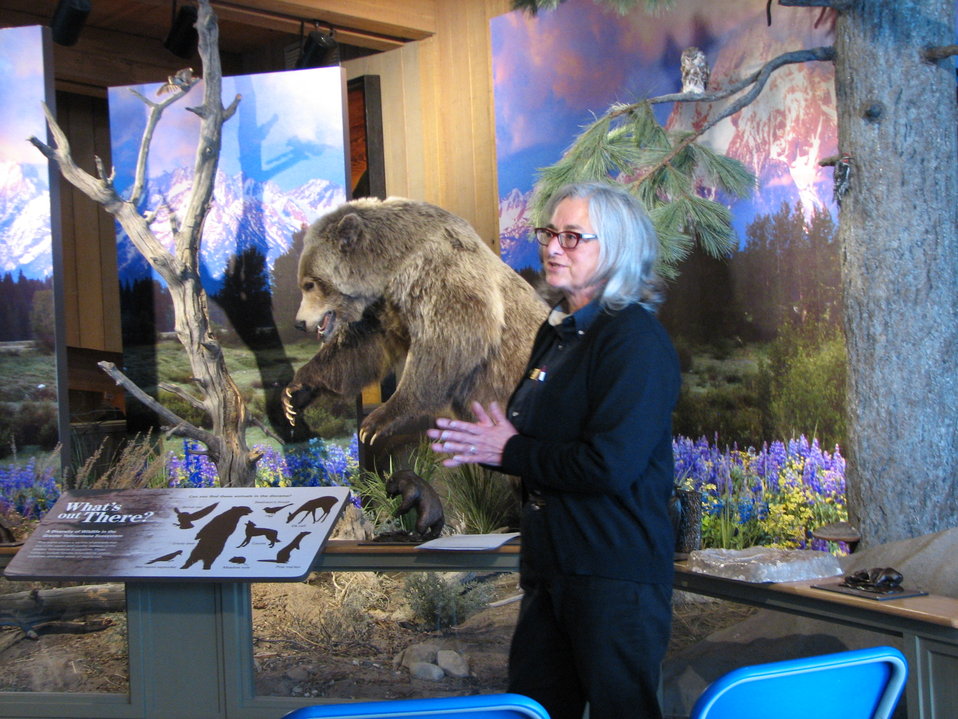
A Striking Backdrop for an Interpretive Program

National Elk Refuge volunteer, Claudia Rector, gives an educational program in front of the diorama on the top floor of the Jackson Hole & Greater Yellowstone Visitor Center. Both formal and informal programs are offered at the visitor center.